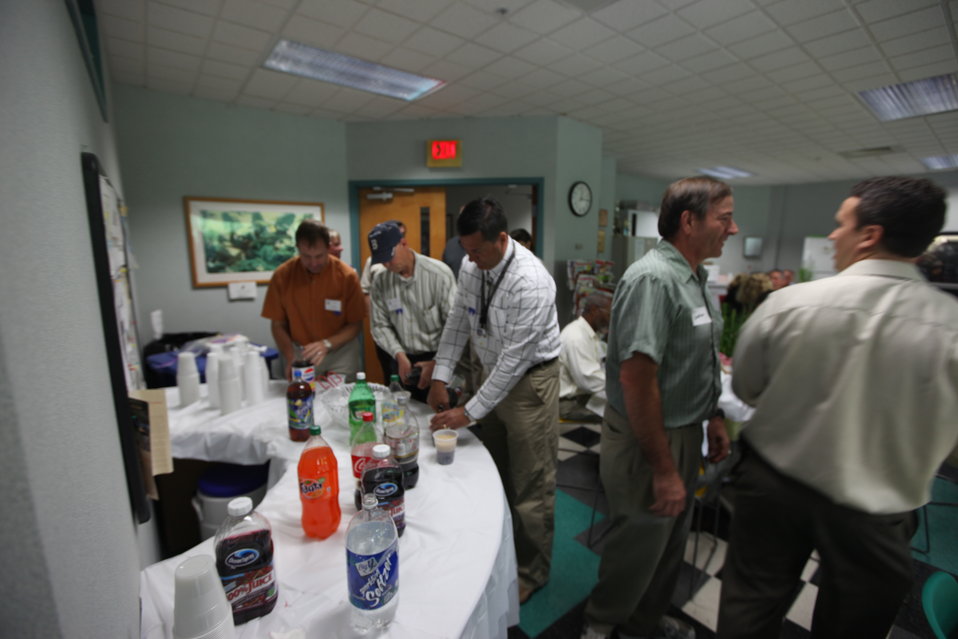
Northeast Region Employee Appreciation Awards

Award winners getting drinks and enjoying lunch before the awards